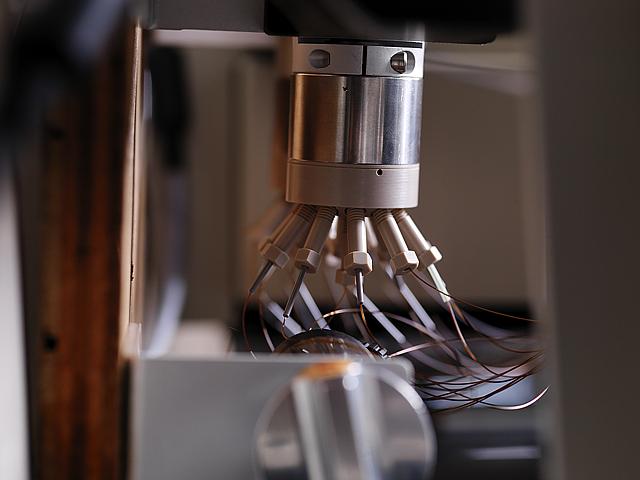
At PNNL Environmental Molecular Science Laboratory, scientists use this mass spectrometer and other tools to facilitate advanced global proteomics research and allow detailed visualization and analyses of cellular proteins.